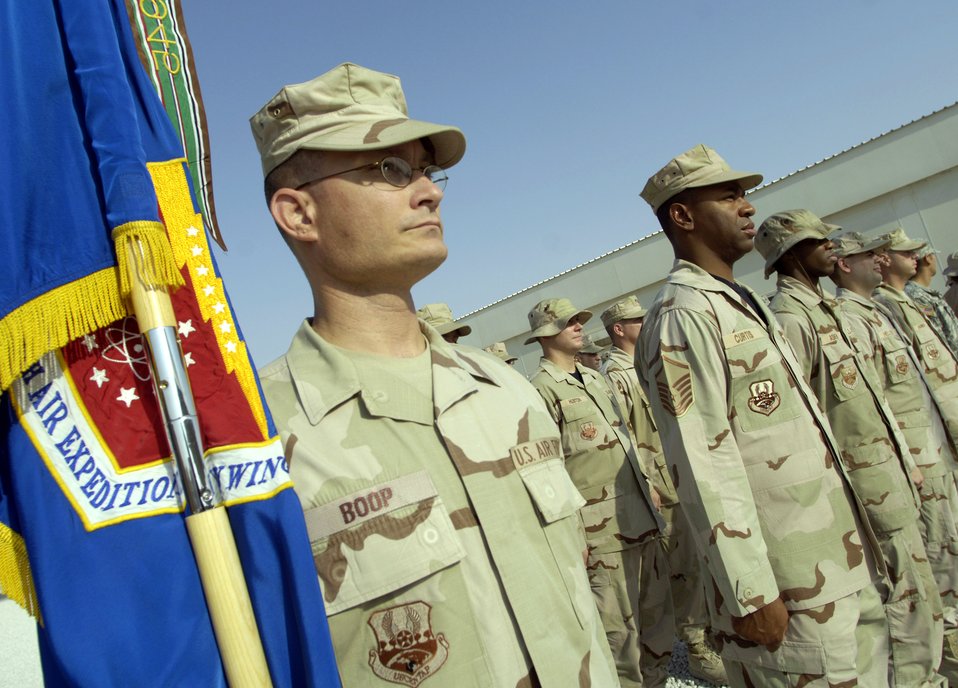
Southwest Asia memorial

Master Sgt. Michael Boop serves as flag bearer as coalition partners from several countries gathered May 28 at this deployed location in Southwest Asia to participate in a Memorial Day ceremony. Originally known as Decoration Day, Memorial Day ceremonies are a time to pay tribute to servicemembers who have paid the ultimate sacrifice in securing freedom.